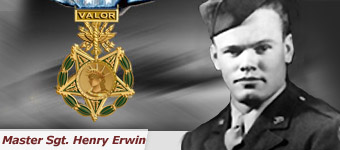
Master Sgt. Henry Erwin, Medal of Honor recipient, saved the lives of his comrades during an attack on Koriyama, Japan, April 12, 1945. He was the radio operator of a B-29 Superfortress.